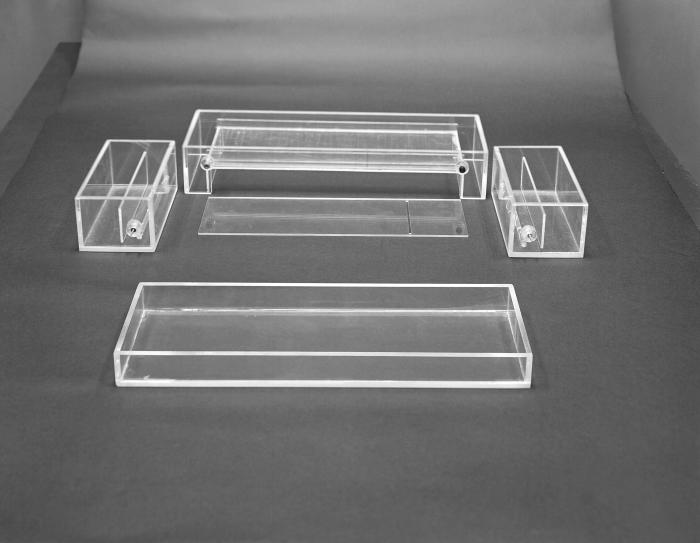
This historic image from 1963 depicts a disassembled starch block electrophoresis apparatus. See PHIL 12023 for an assembled view of this apparatus.